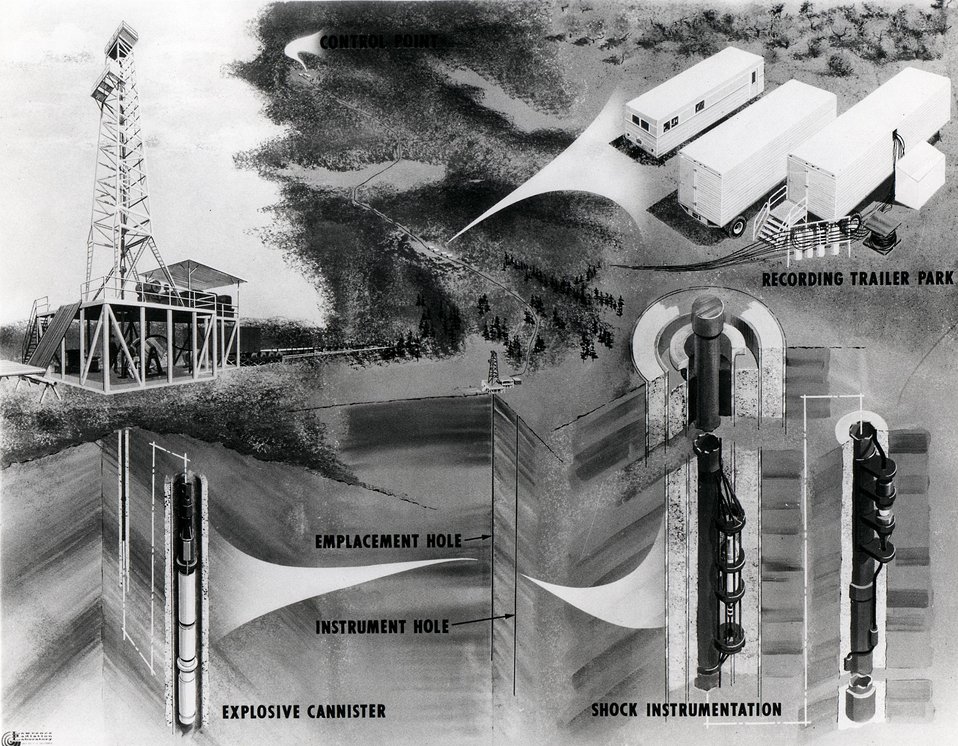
Emplacement and instruction plan for Gasbuggy, the Nation's first joint Government-industry experiment under the AEC's Plowshare Program, to investigate the feasibility of using nuclear explosions to exploit natural resources.